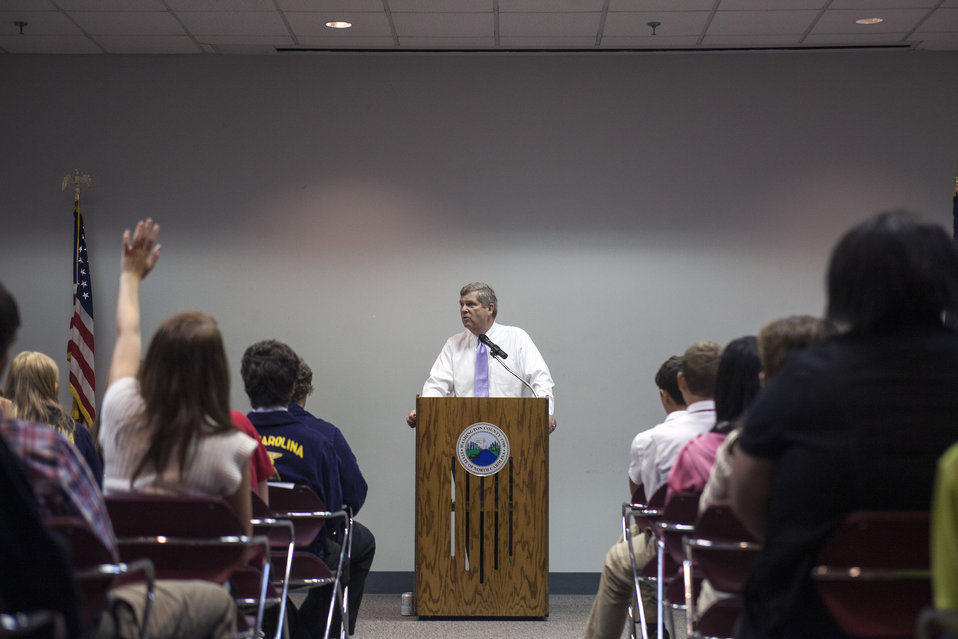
Agriculture Secretary Tom Vilsack speaks with students on the future of American agriculture at Northeast Regional School of Biotechnology and Agriscience in Plymouth, NC on Friday, Aug. 15, 2013.